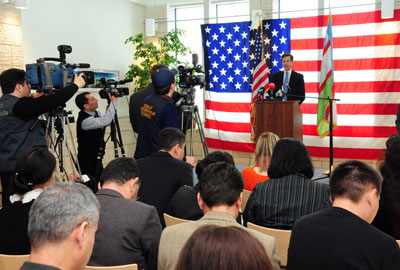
Assistant Secretary Blake Leads a Press Conference

U.S. Assistant Secretary of State for South and Central Asian Affairs Robert O. Blake responds to reporters’ questions during his visit to Tashkent, Uzbekistan, for the second round of its Annual Bilateral Consultations with Uzbekistan on February 18, 2011.